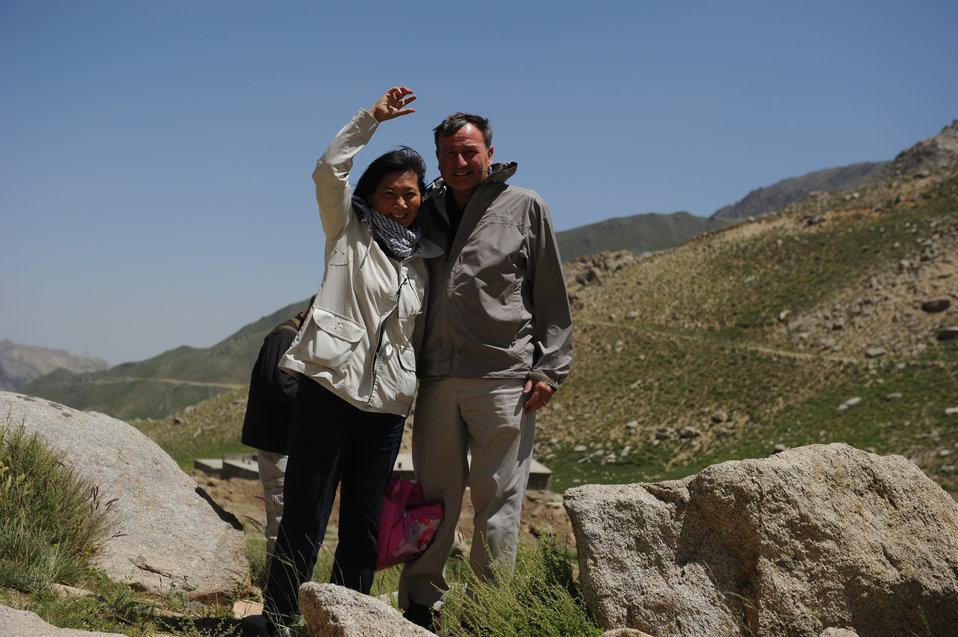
U.S. Ambassador Karl W. Eikenberry attends a ceremony to mark the beginning of renovations at the Salang Tunnel on the border of Parwan and Baghlan Provinces, Afghanistan, on Wednesday, June 15, 2011. (S.K.Vemmer/Department of State)